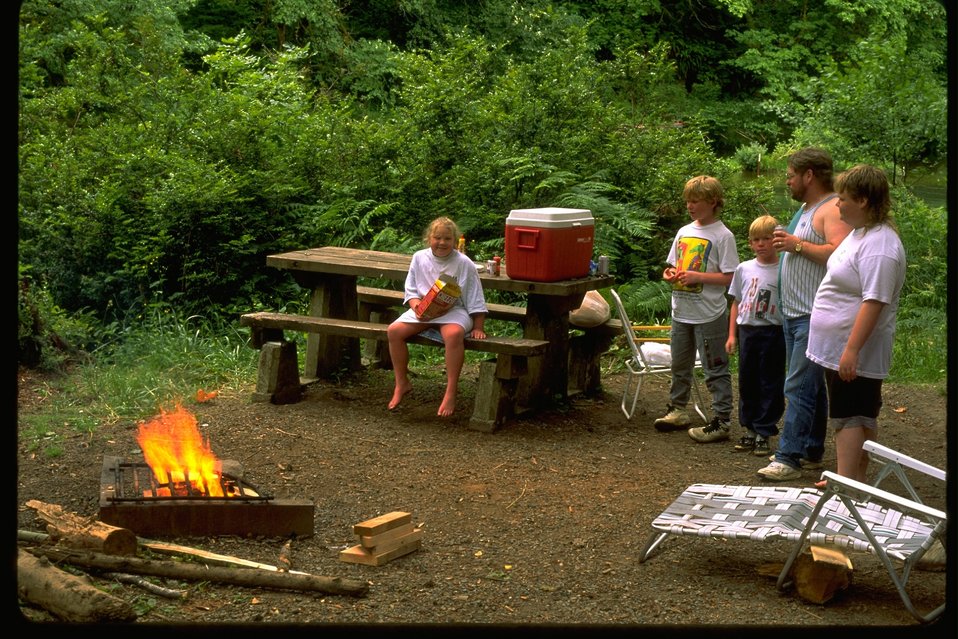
Picnicing at Vincent Creek.